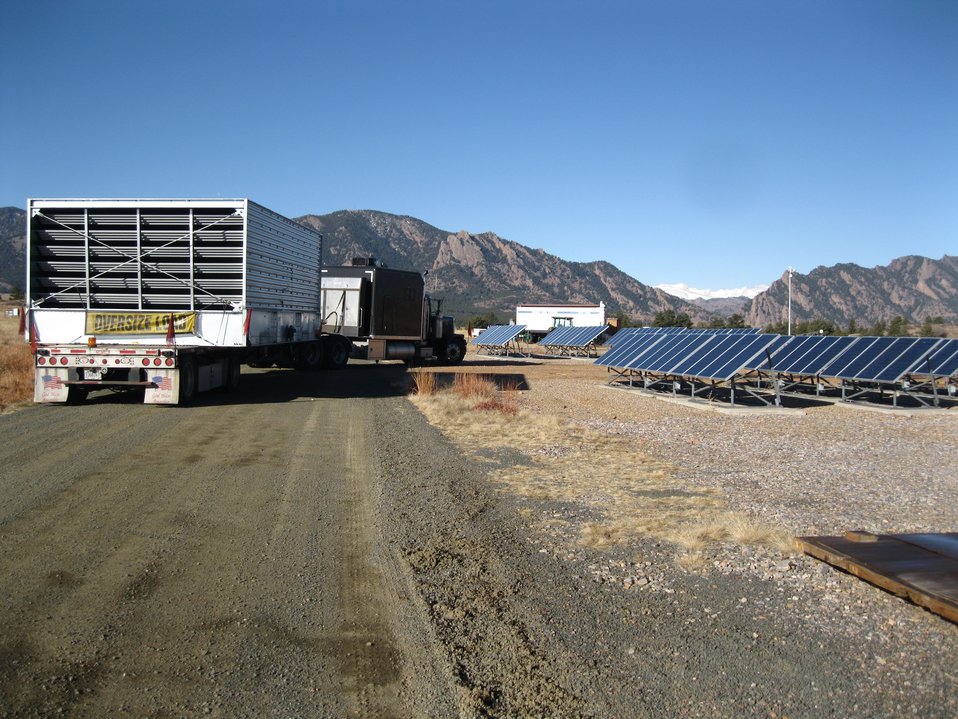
UTC PURE CYCLE UNIT FOR A LOW-TEMPERATURE GEOTHERMAL POWER PLANT DEMONSTRATION.

UTC PURE CYCLE UNIT BEING MOVED FROM THE ROCKY MOUNTAIN OIL FIELD TESTING CENTER (RMOTC) TO NREL'S NATIONAL WIND TECHNOLOGY CENTER.